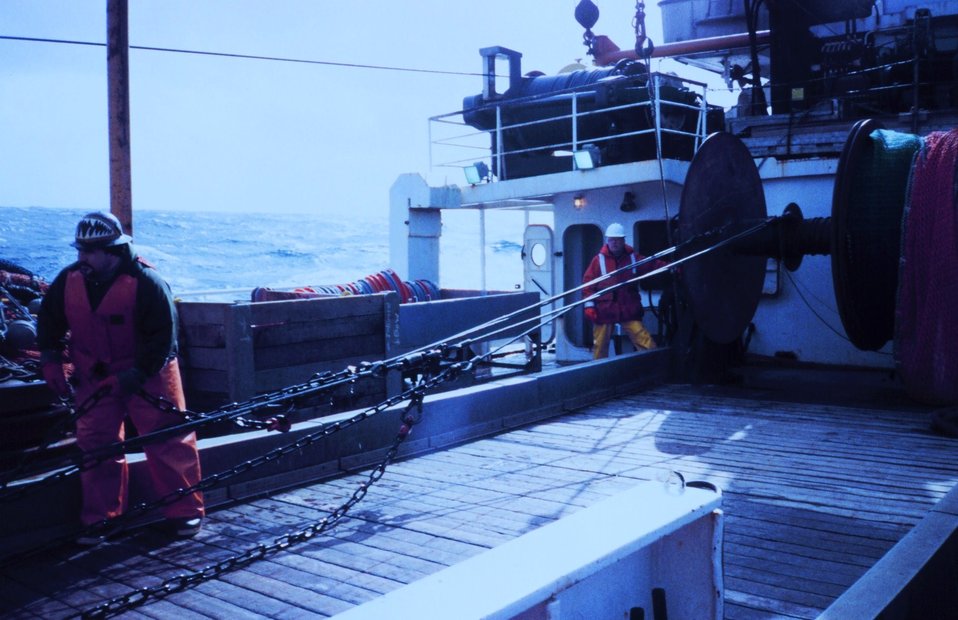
Beginning of haulback of net at the end of a trawl.